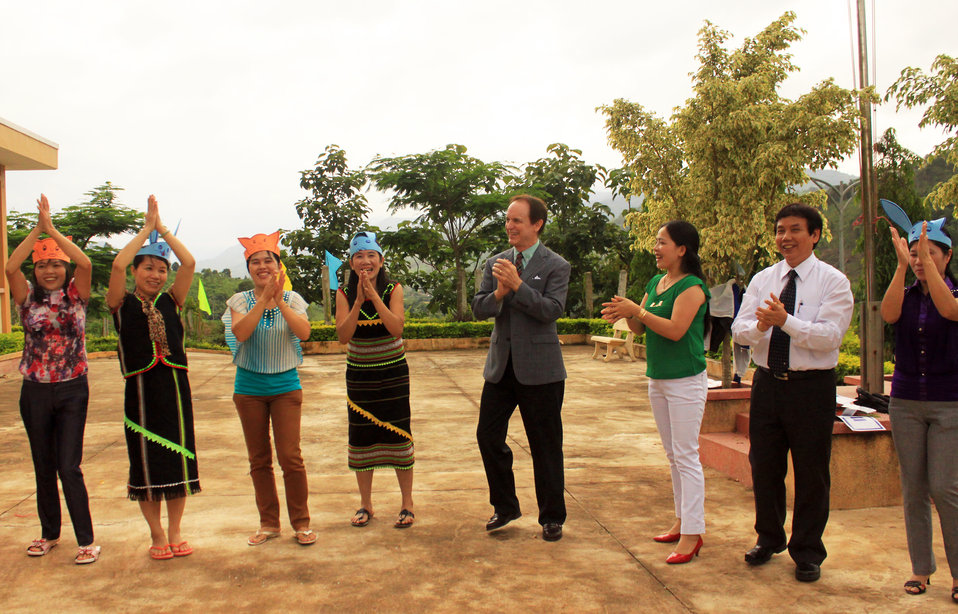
USAID Mission Director Francis Donovan joins local teachers as they practice what they learned from USAID-funded intensive training courses